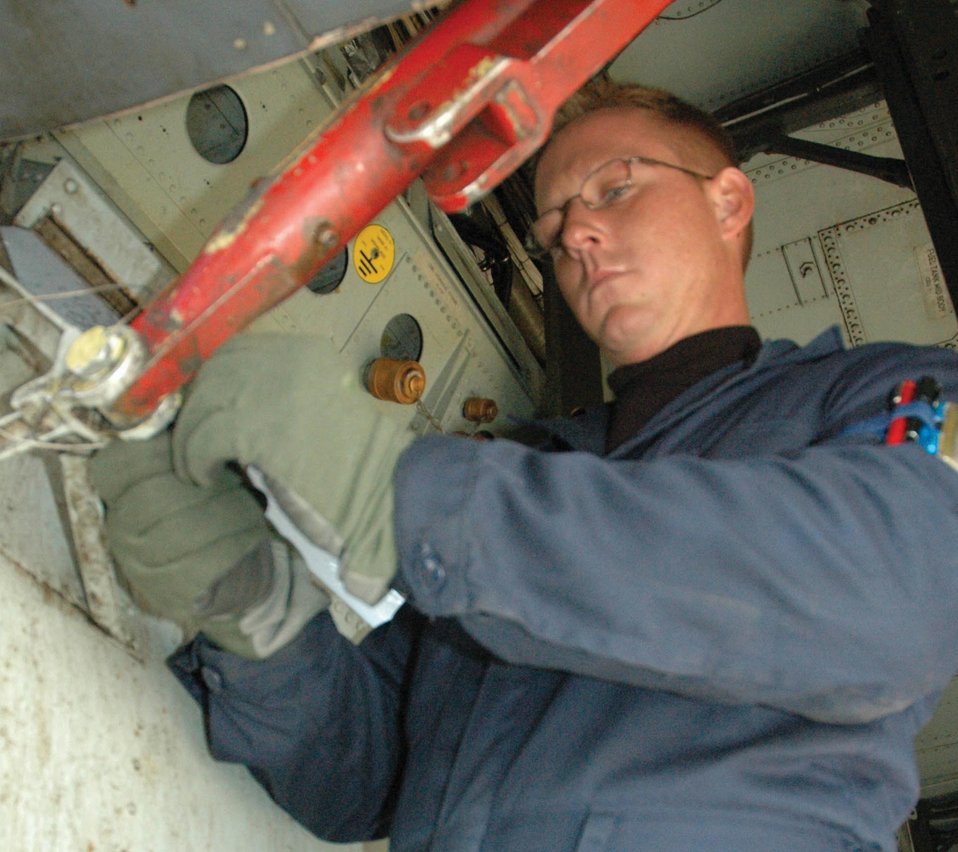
Buff

MINOT AIR FORCE BASE, N.D. -- Staff Sgt. Ben Davis connects the support rods to a B-52H Stratofortress bomb bay doors. The sergeant is a crew chief with the 5th Aircraft Maintenance Squadron.